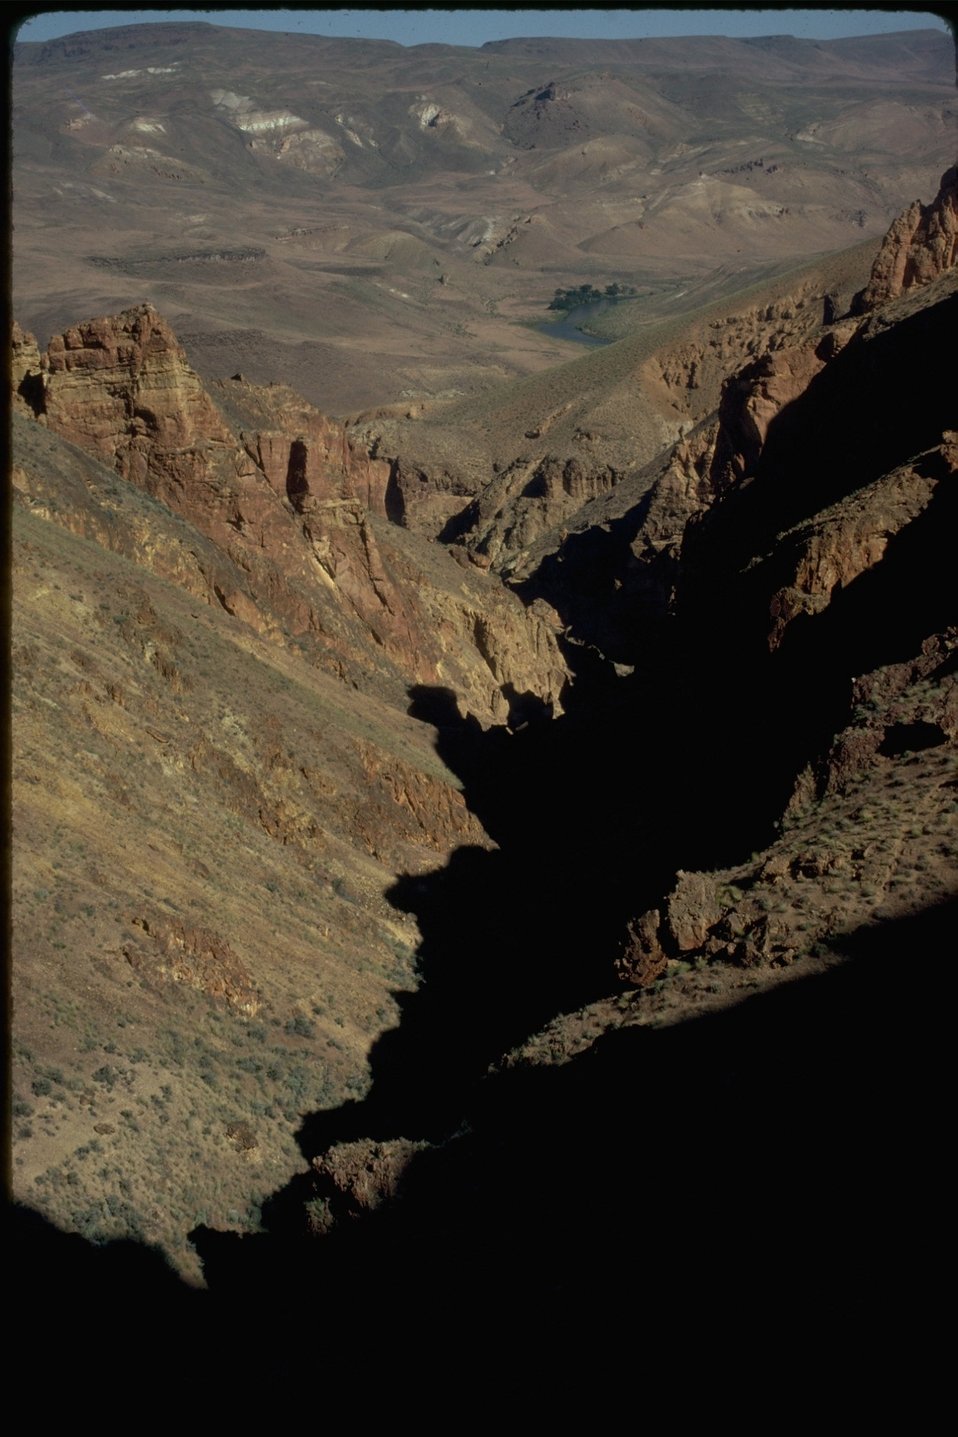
View of an unnamed canyon.